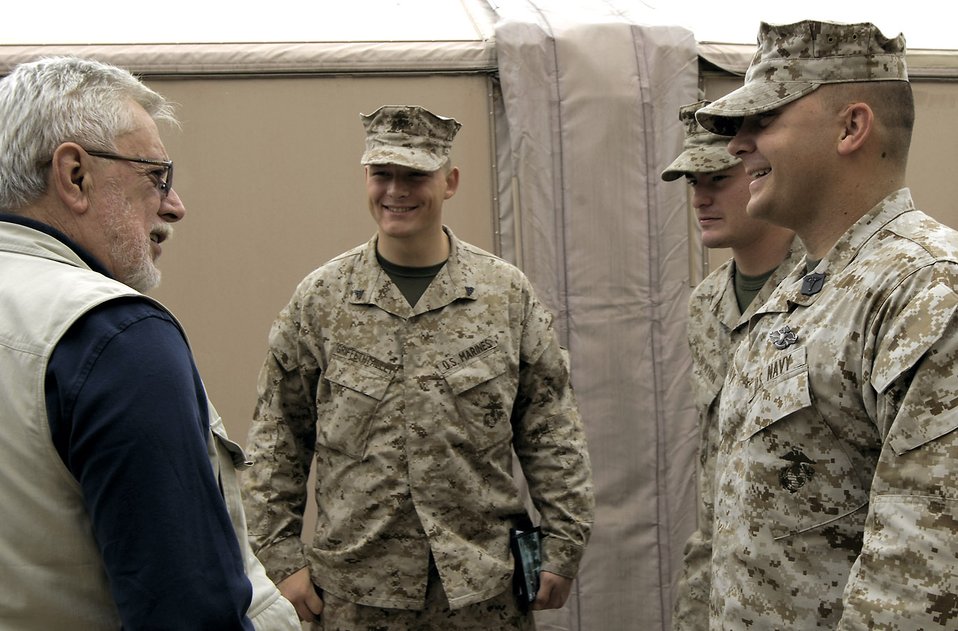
Medal of Honor recipients visit Manas Air Base

Medal of Honor recipient retired Marine Capt. John J. McGinty III visits with Marines March 15 at Manas Air Base, Kyrgyzstan. Captain McGinty received his medal from actions taken during the Vietnam War.